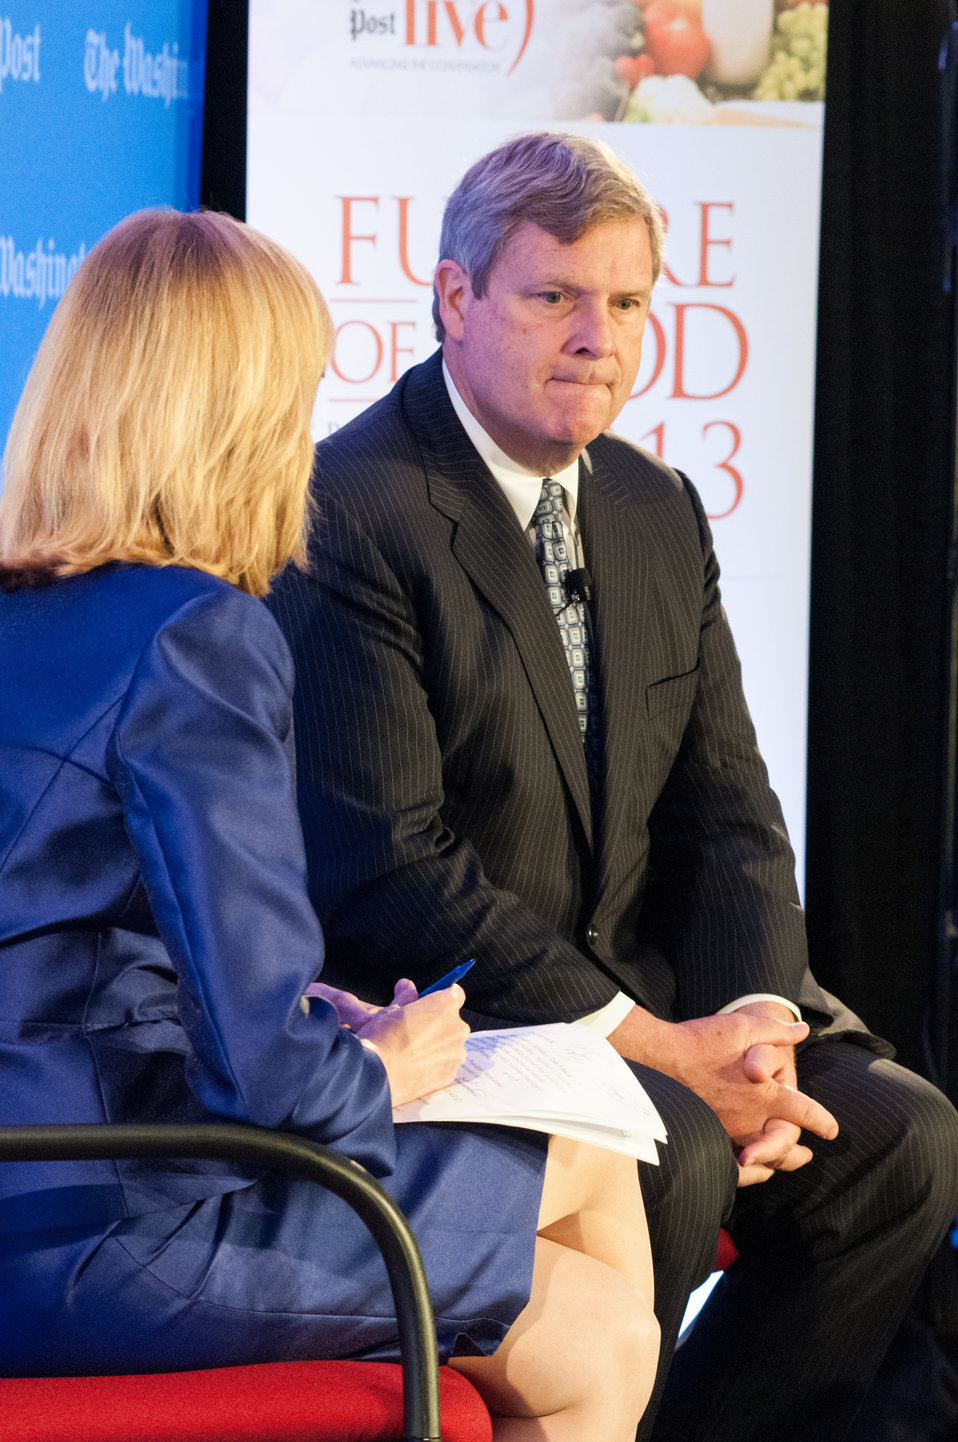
Agriculture Secretary Tom Vilsack ponders a question posed during the annual live forum, “Future of Food: Building a Sustainable Food System 2013,” sponsored by the Washington Post in Washington, D.C. on Wednesday, May 22, 2013. Secretary Vilsack along with leading agricultural, government and nutrition experts discussed expanding healthy, sustainable food systems, public-private partnerships, the market’s role in nutrition and the future of agricultural innovation.